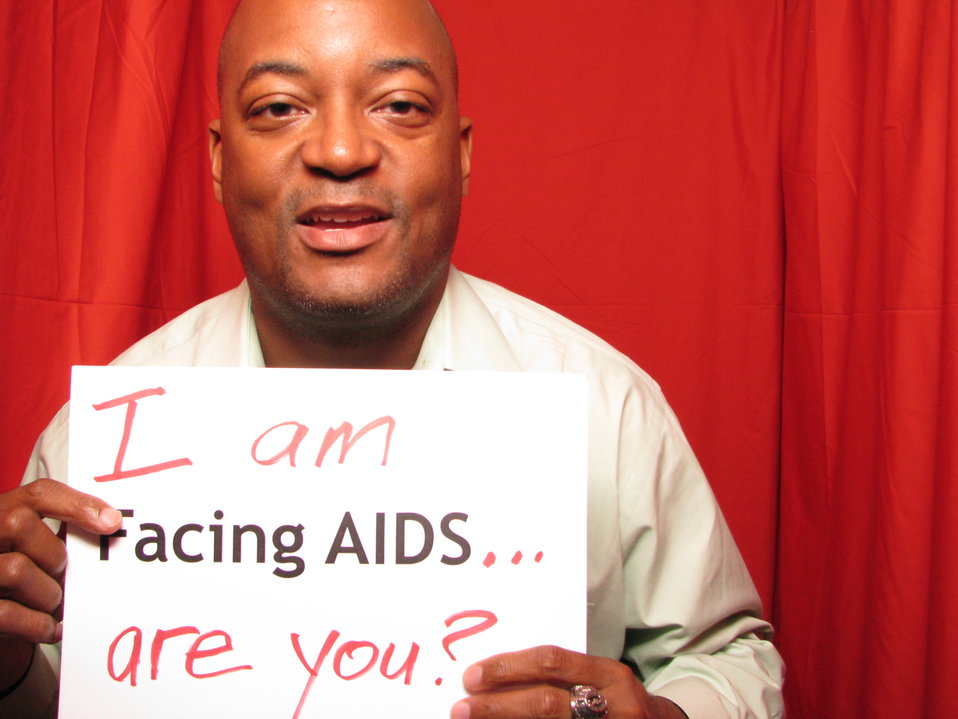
I am FACING AIDS... are you?

From the AIDS.gov photo booth at the U.S. Conference on AIDS, September 2010 (Orlando, FL).